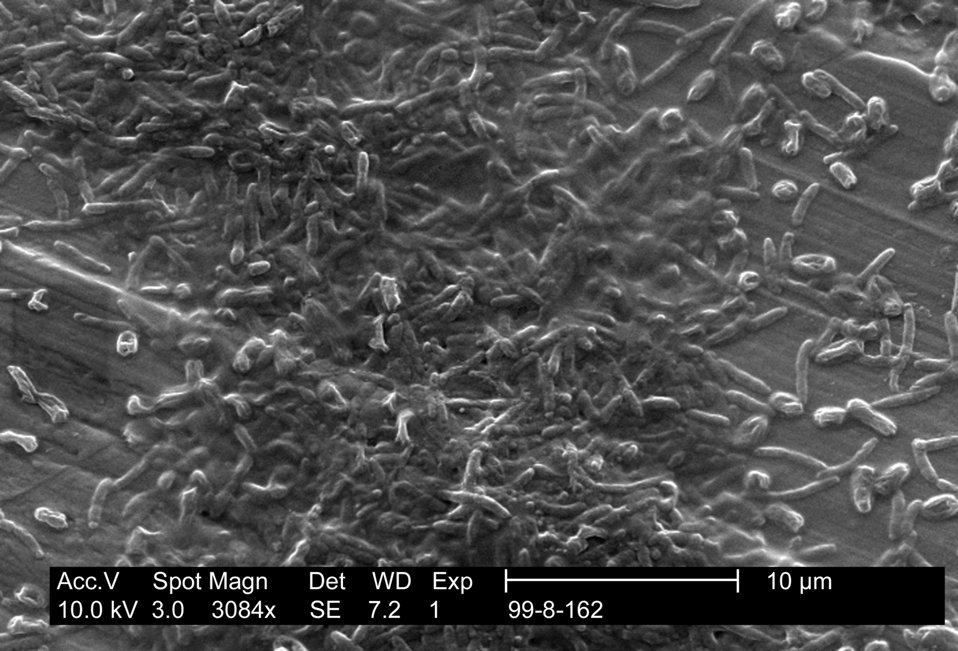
Scanning electron micrograph of a laboratory-grown potable water biofilm.